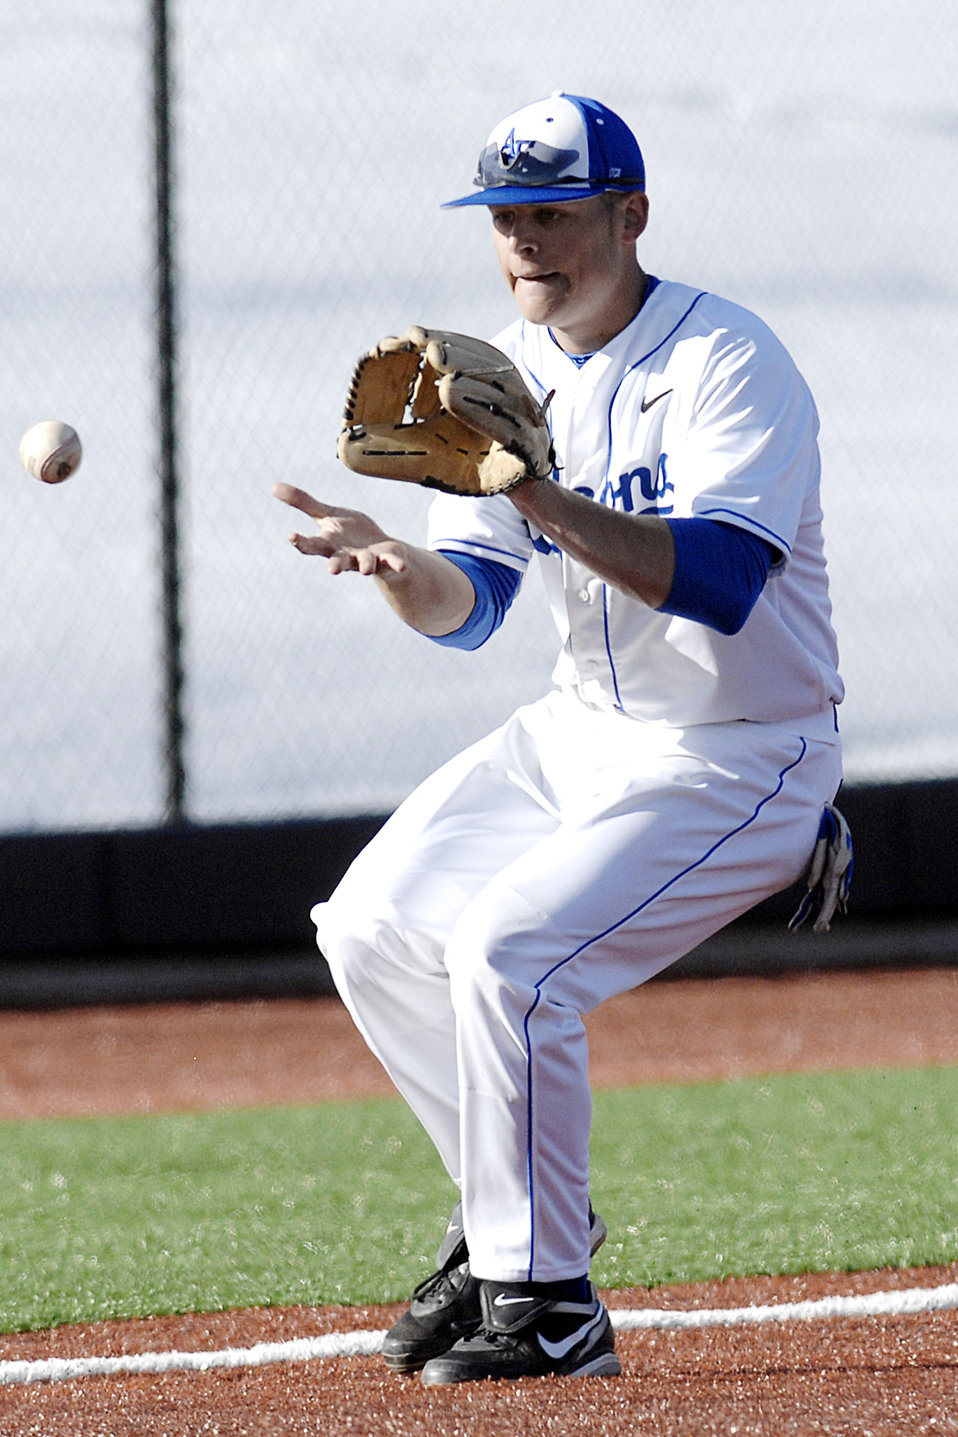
Falcons win baseball home opener

Falcon freshman third baseman Ethan Loosen fields a grounder as the Air Force baseball team went on to a 15-5 victory over Colorado Christian in its home-opener at the U.S. Air Force Academy's Falcon Field March 2, 2010.